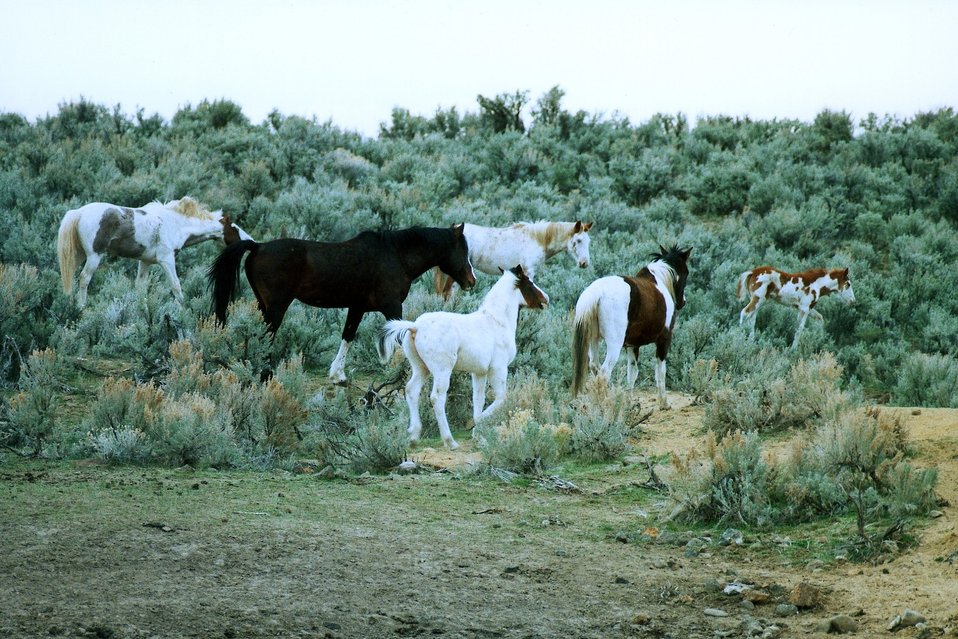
Medium shot of mares and a foal.